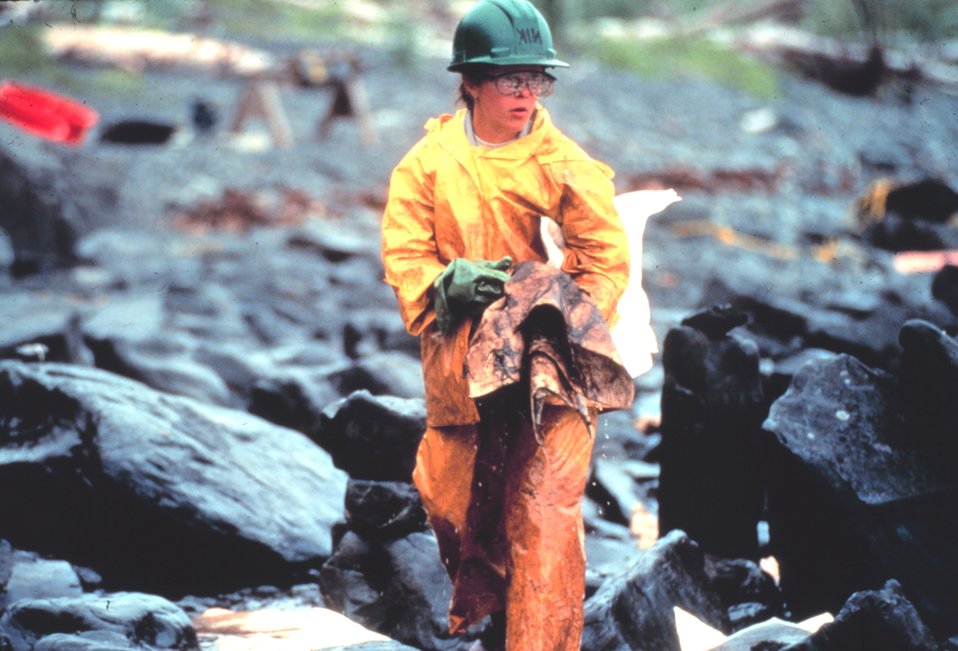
Worker in oiled intertidal zone